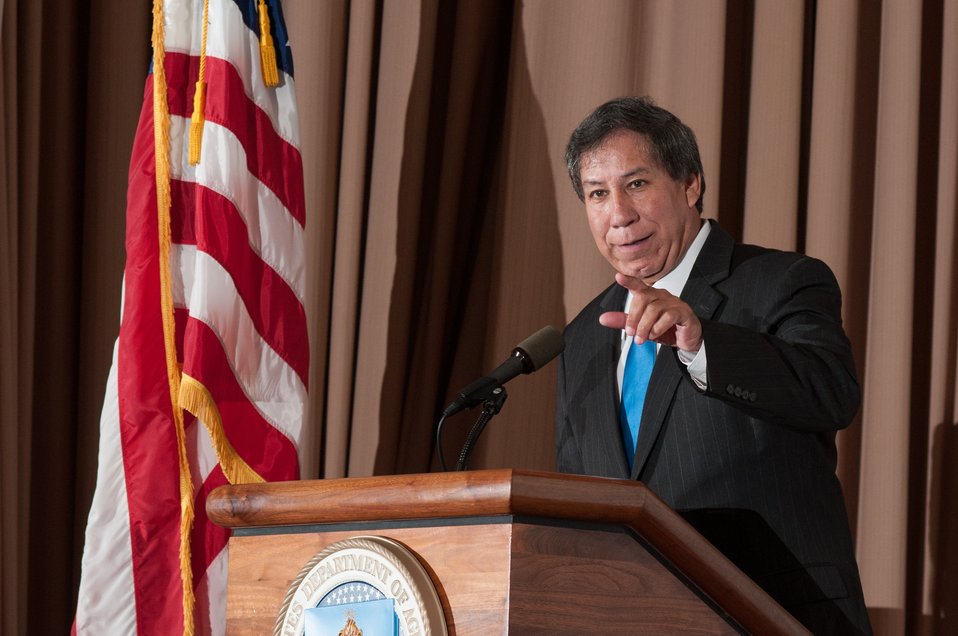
U.S. Department of Agriculture (USDA) Under Secretary for Marketing and Regulatory Programs Ed Avalos speaks during the USDA Asian Pacific American Heritage Month Observance, at the USDA headquarters in Washington, D.C., on Thursday, May 23, 2013. This year’s theme is “Building leadership; Embracing the Cultural Values and Inclusions.”